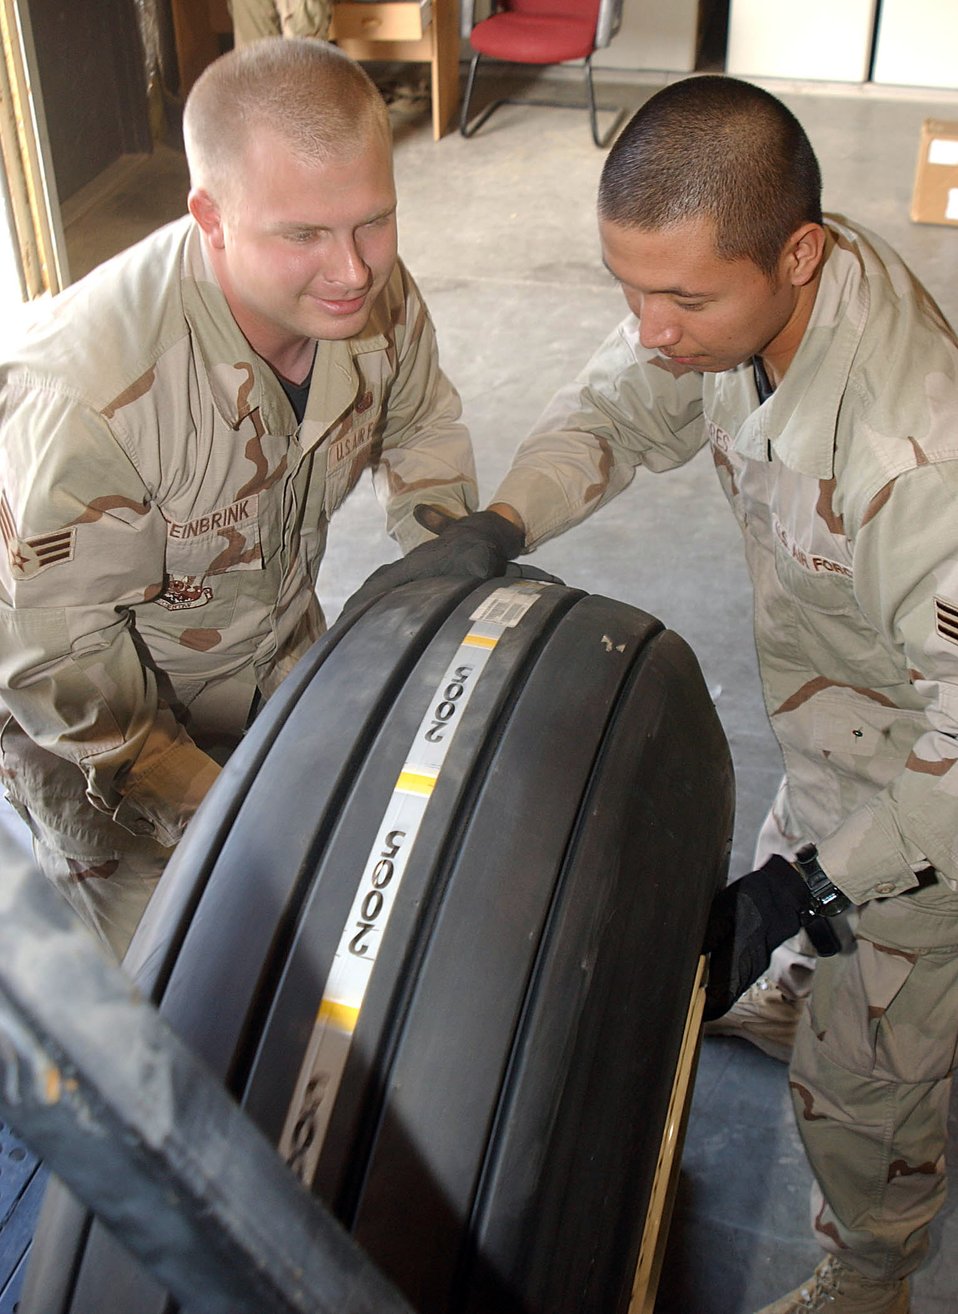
Tire removal

SOUTHWEST ASIA (AFPN) -- Senior Airman Isaiah Steinbrink (left) and Senior Airman Jameson Flores replace a tire on a KC-135 Stratotanker's main landing gear in the 380th Expeditionary Logistics Readiness Squadron's flightline supply shop. The Airmen are deployed from the 62nd Logistics Readiness Squadron at McChord Air Force Base, Wash.